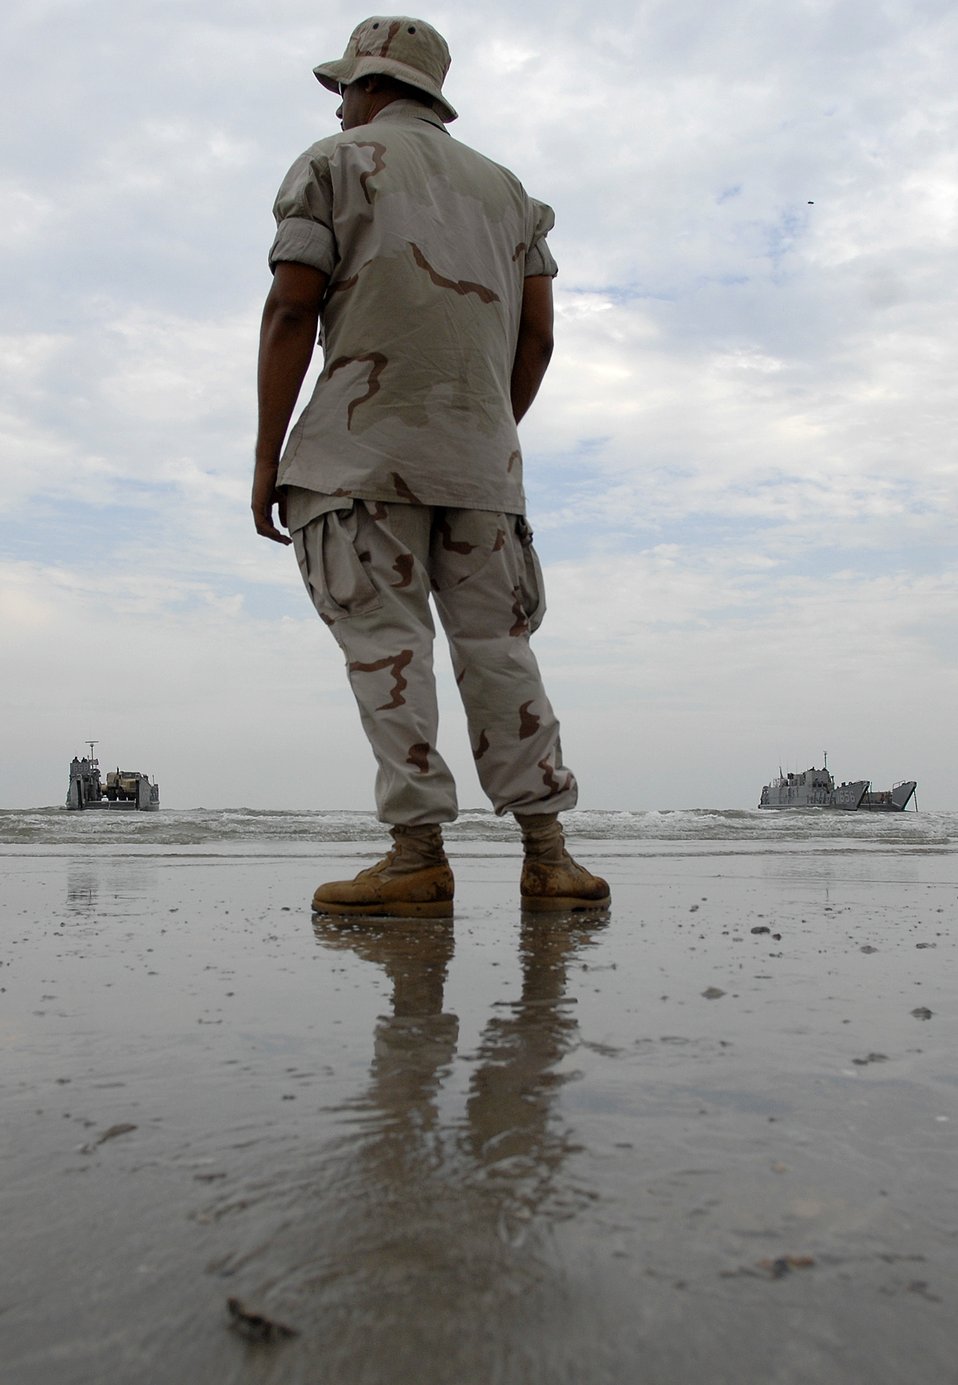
USS Nassau delivers critical help to

A member of Beachmaster Unit Two directs utility landing crafts from the amphibious assault ship USS Nassau Sept. 18 on the beach near Galveston, Texas to begin disaster relief efforts . The Nassau is anchored off Galveston to provide disaster response and aid to civil authorities as directed in the wake of Hurricane Ike.